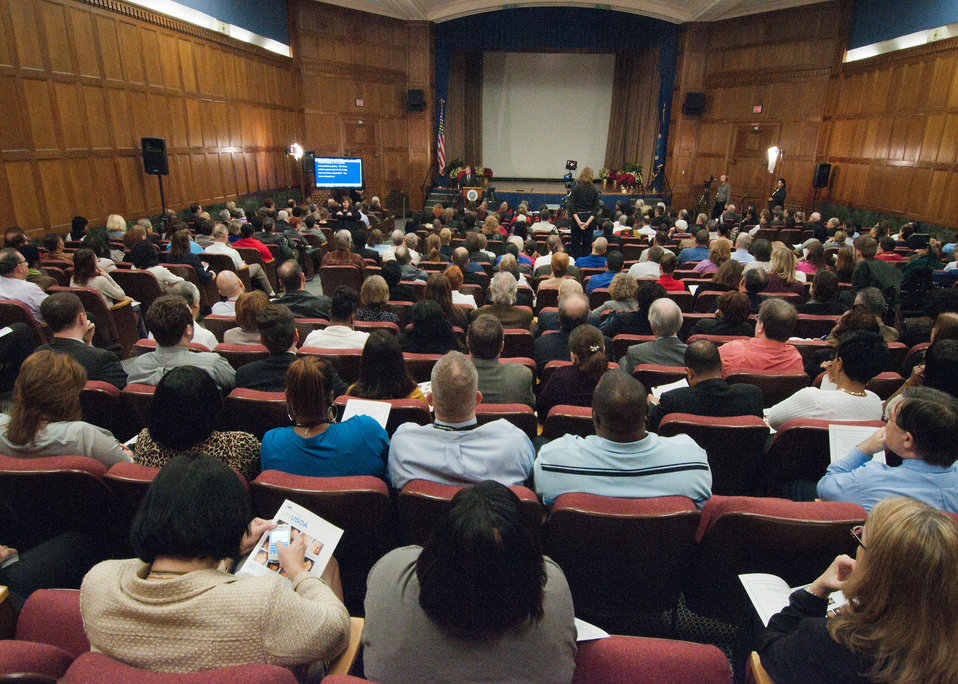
Agriculture Secretary Tom Vilsack addresses employees at the U.S. Department of Agriculture’s (USDA) Fourth Annual Cultural Transformation event held in Washington, D.C. on Tuesday, Dec. 4, 2012. The theme for the event “Faces of Cultural Transformation” Focusing on changing the way we serve our customers and cultural transformation’s benefits to employees. Secretary Vilsack spoke of the progress made during his administration’s tenure at the department and how USDA is cited as a positive example of cultural transformation in the workplace.